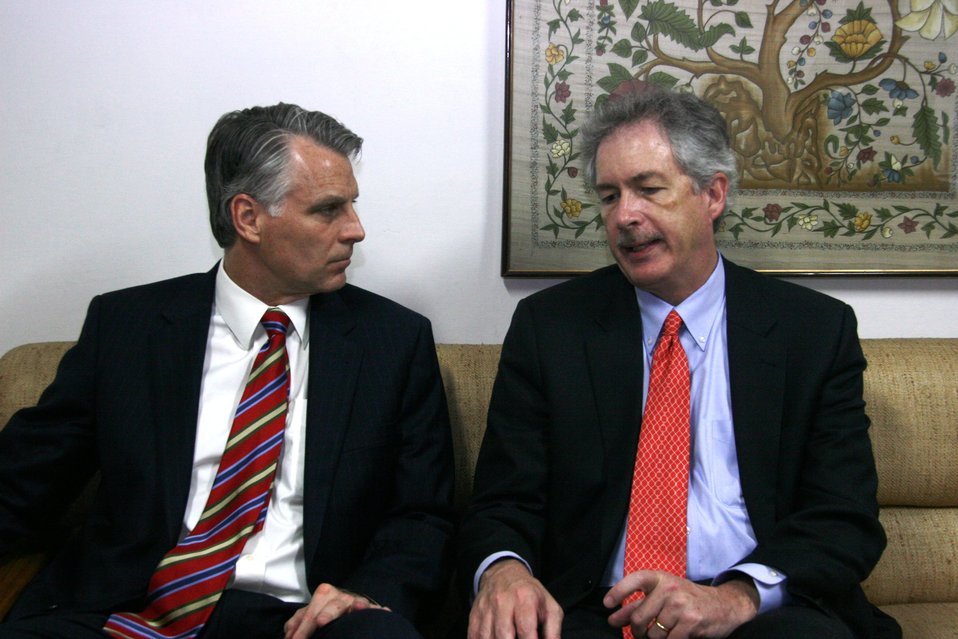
Under Secretary Burns Meets With Ambassador Roemer

Under Secretary for Political Affairs William J. Burns meets with U.S. Ambassador to the Republic of India Timothy J. Roemer in New Delhi, India, on May 24, 2010.